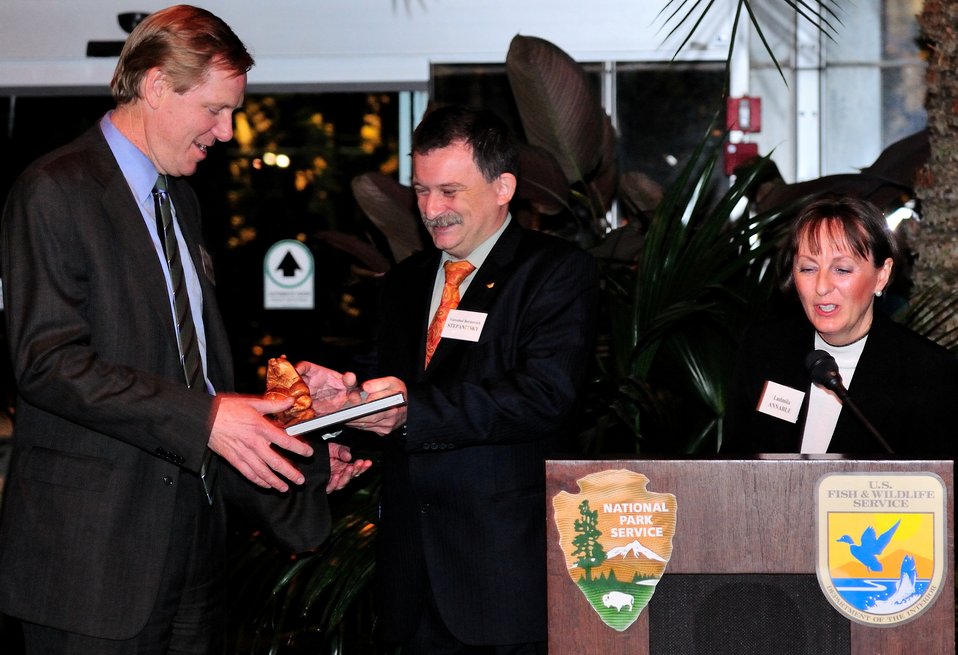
Shafroth Stepanitsky Exchange Gifts

U.S. Department of Interior and Russian Ministry of Environment and Natural Resources celebrate long-term collaboration efforts at the U.S. Botanical Garden.